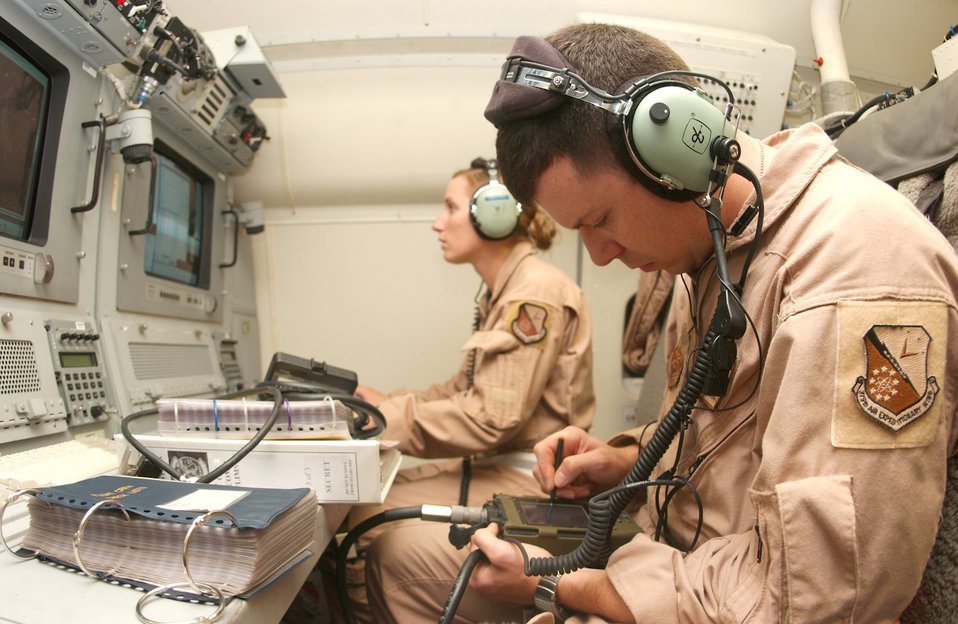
Sailing the skies

Staff Sgt. Mark Porter and Senior Airman Nicole LaGrow upload software onto an E-8C Joint STARS aircraft as they perform radio and computer checks in preparation for a flight. Both Airmen are assigned to the 12th Expeditionary Airborne Command and Control Squadron. The flight over Iraq marked 20,000 flying hours in support of Operation Iraqi Freedom by the Boeing 707 equipped with the Joint Surveillance Target Attack Radar System. Accomplishing that feat since early 2003 have been the combined efforts of the 12th EACCS, 16th EACCS and 128th EACCS, all from Robins Air Force Base, Ga., during alternating 90-day rotations. The JSTARS is an airborne battle management aircraft specializing in command and control, and intelligence, surveillance and reconnaissance gathering. Information gathered is passed in real time to servicemembers on the ground conducting combat operations.